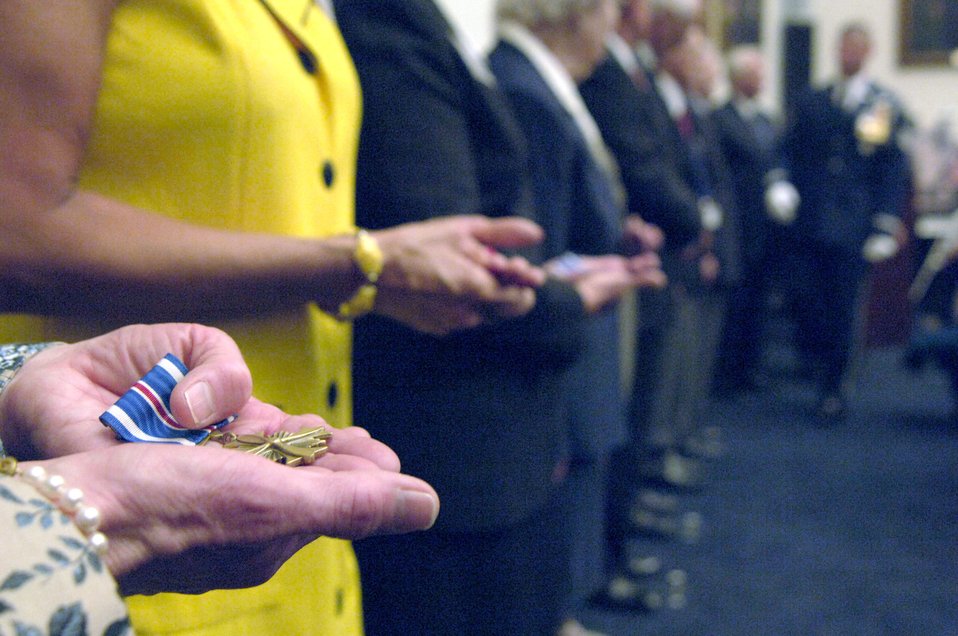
WWII bomber crew awarded Distinguished Flying Cross

In the hands of surviving members of the